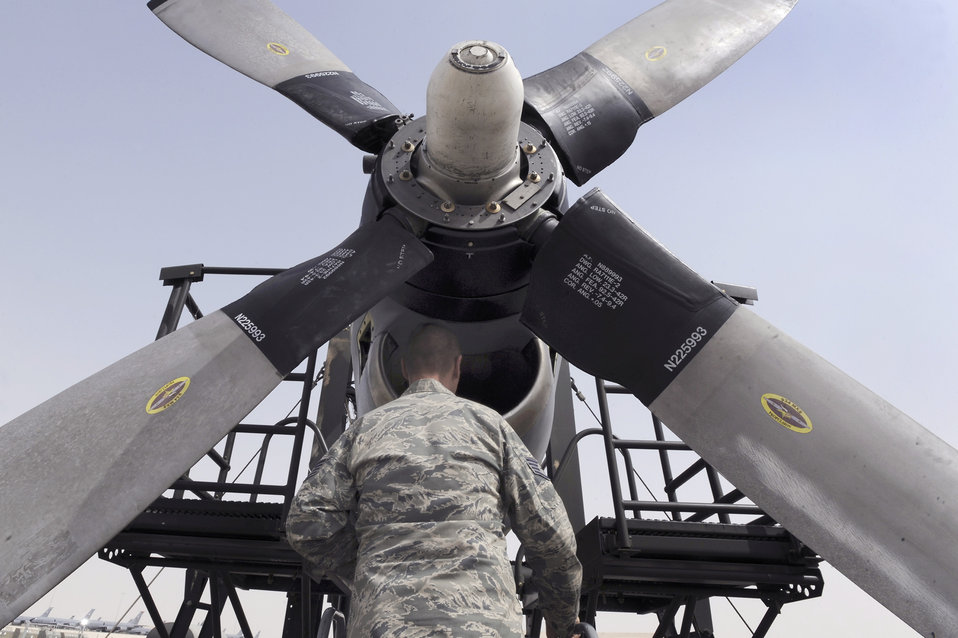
New test cell

Tech. Sgt. Richard Replinger, a turbo propulsion craftsman with the 379th Expeditionary Maintenance Squadron at an air base in Southwest Asia, performs a pre-run inspection on a C-130H Hercules engine June 14 prior to running a test on the engine. This is the only T56 test cell in the U.S. Central Command area of responsibility. The T56 enables maintainers to test engines in the AOR instead of sending them back to Ramstein Air Base, Germany. Sergeant Replinger, a native of Fayetteville, N.C., is deployed from Hurlburt Field, Fla.